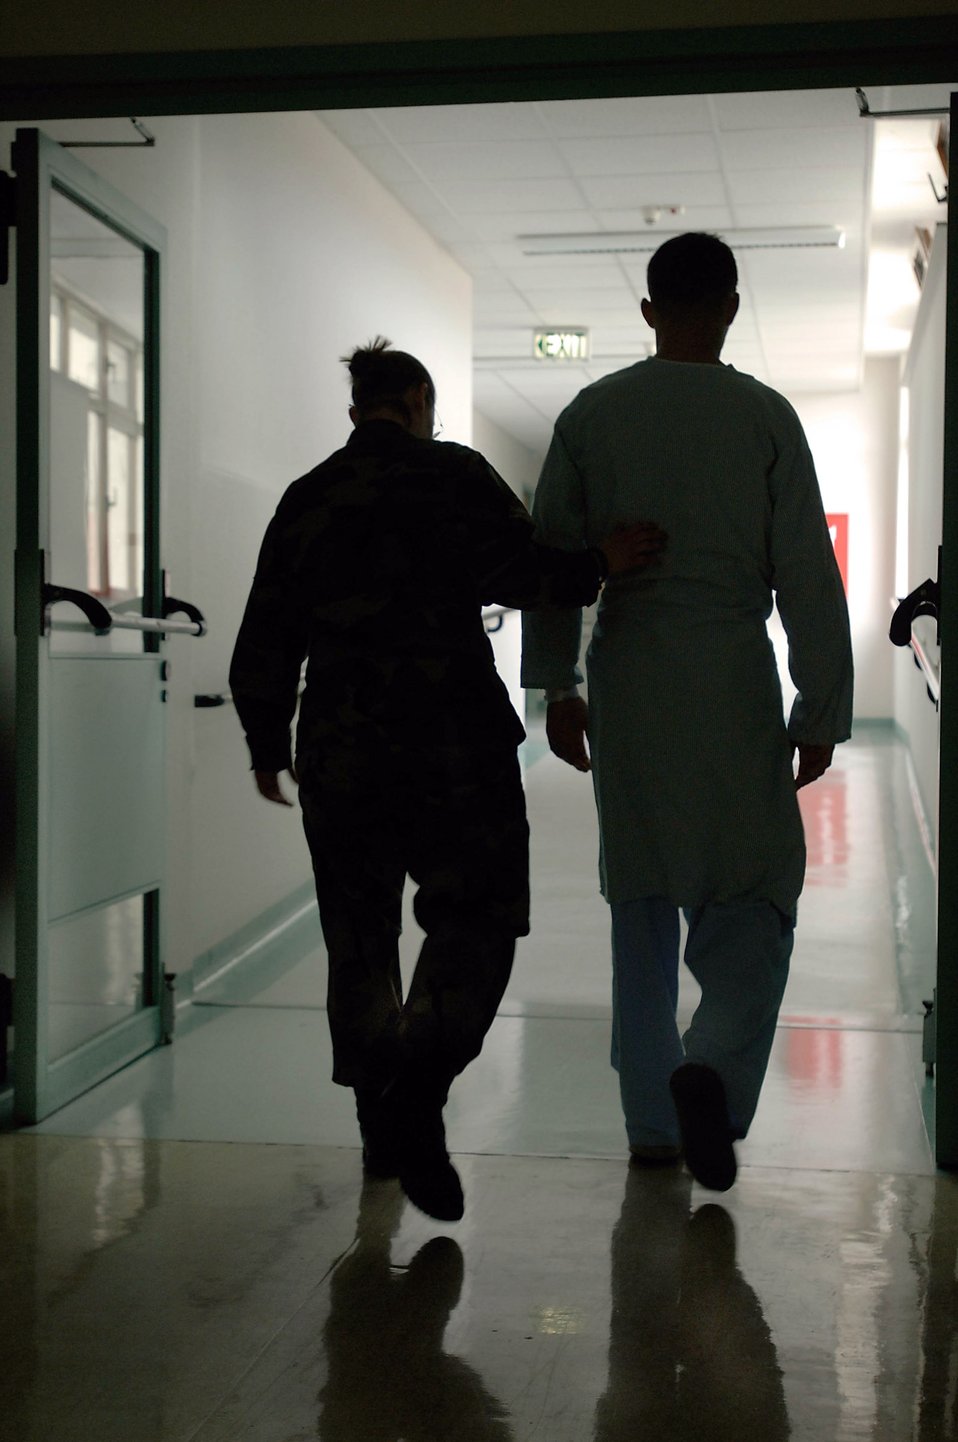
Landstuhl symbol of hope to wounded troops

LANDSTUHL REGIONAL MEDICAL CENTER, Germany -- Airman 1st Class Cassandra Gillard (left) helps Marine Corps Cpl. Tyler Einarson walk to see a doctor who will change the dressing on his two gunshot wounds. The 3rd Marine Division rifleman is recovering here from gunshots received to the chest and arm while on patrol in northeast Afghanistan in mid-August. A joint team of Airmen, Soldiers, Sailors, Marines and civilians provide care for wounded troops at this medical center. Airman Gillard is a medical technician with the 435th Medical Squadron.